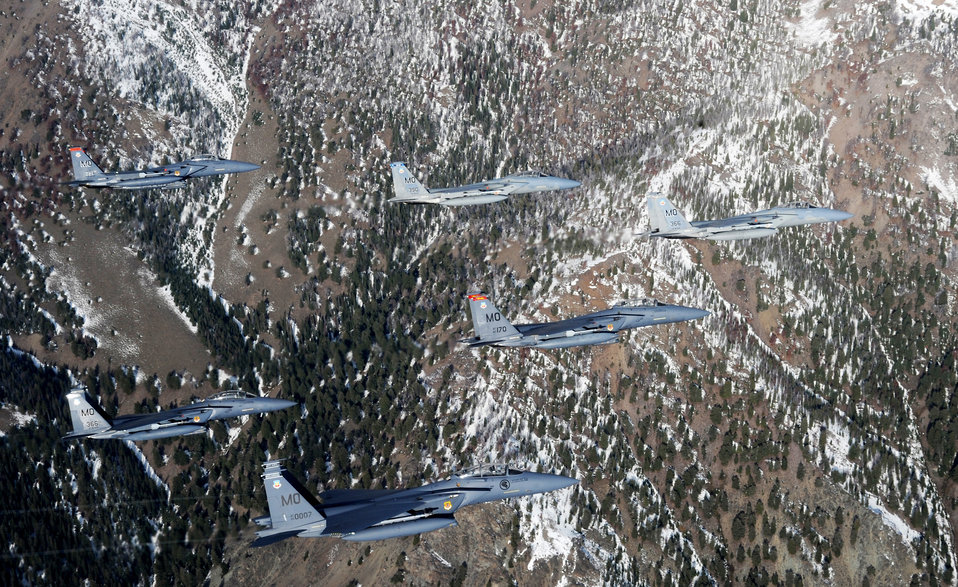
Flying over the Sawtooth Mountains

A six-ship formation of F-15C Eagle and F-15E Strike Eagles from the 366th Fighter Wing at Mountain Home Air Force Base, Idaho, fly over the nearby Sawtooth Mountains Oct. 13, 2009.